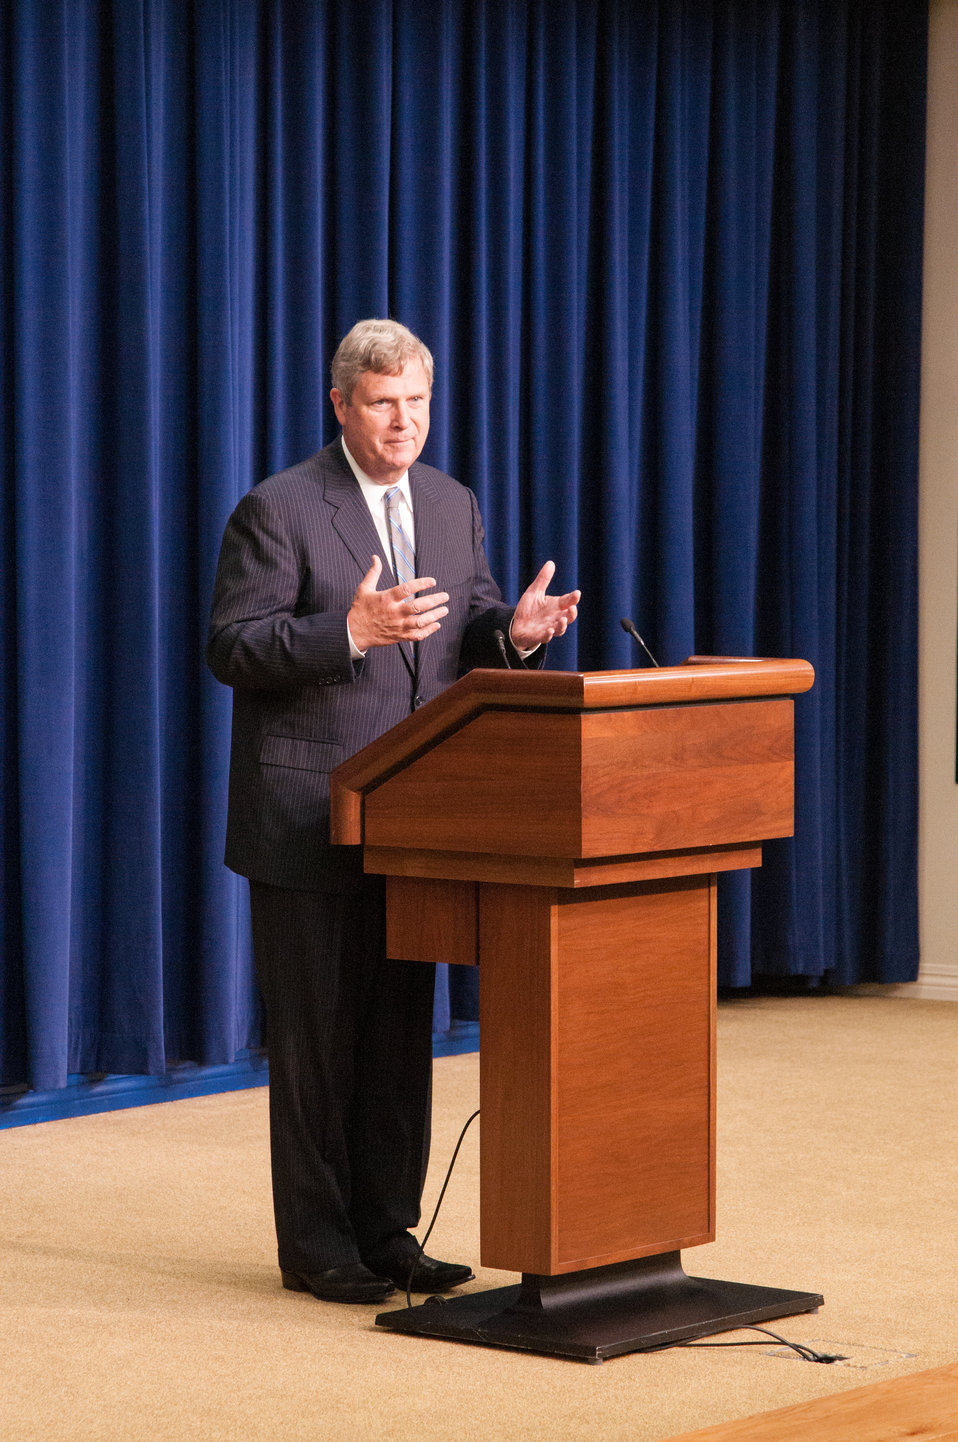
Agriculture Secretary Tom Vilsack speaks at a meeting of the White House Rural Council to an audience of the National State President’s Conference of the FFA on Wednesday, Jul. 24, 2013 in Washington, D.C. Secretary Vilsack took questions from the audience and discussed international, national and agricultural production topics with the FFA State President’s.